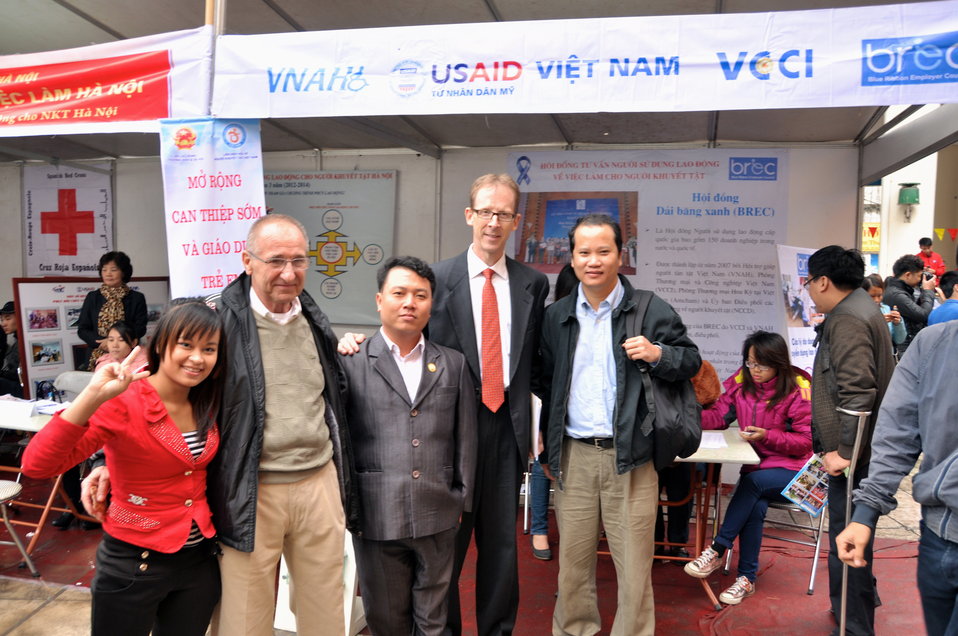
USAID joins celebration of International Day of Persons with Disabilities in Hanoi, Vietnam

December 2, 2012